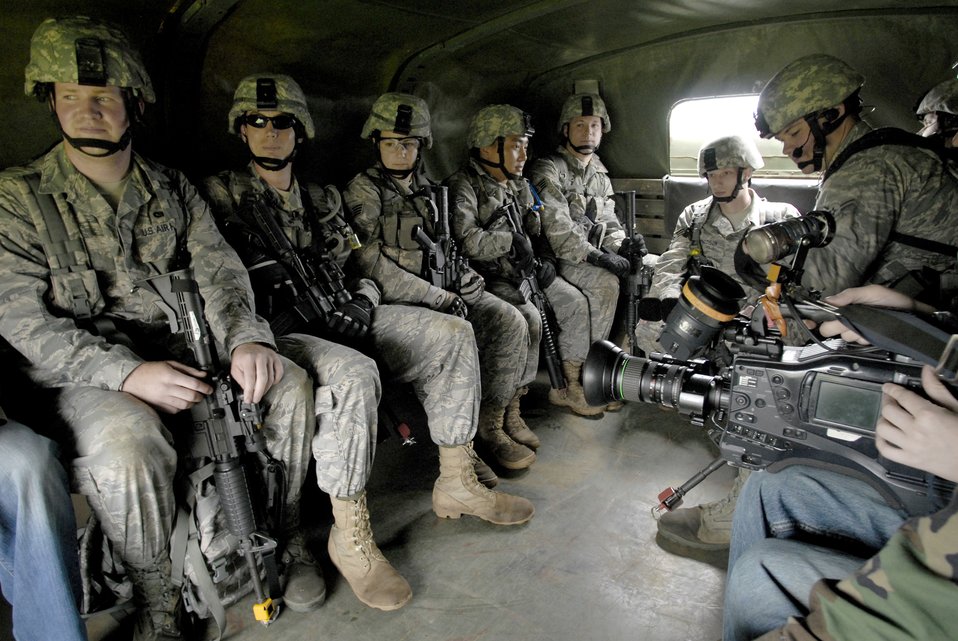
Security forces land navigation exercise

Members of the 115th Security Forces Squadron wait to depart for a training scenario June 14, 2010, at Volk Field Combat Readiness Training Center, Wis. Security forces Airmen conducted a search of a mock village for a person of interest, while preserving the peace in a hostile environment.